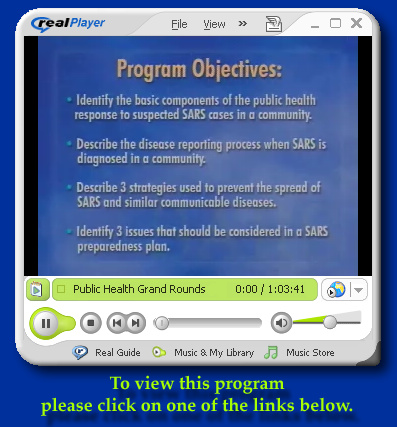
This was a Public Health Grand Rounds broadcast rehearsal session, Oct. 23, 2003; SARS: When a Global Outbreak Hits Home.